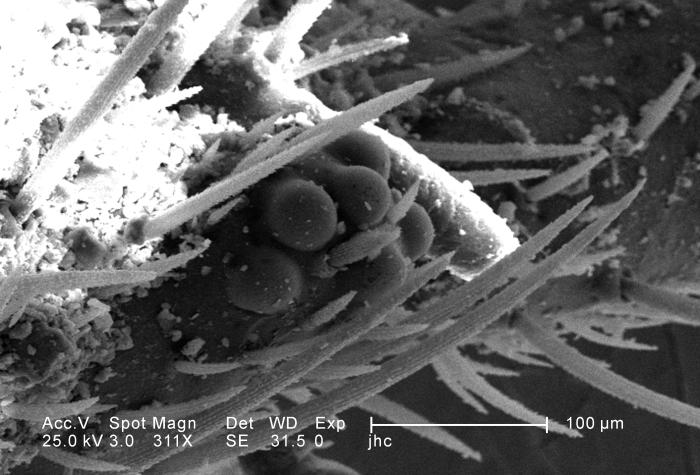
Under a magnification of 311X, this scanning electron micrograph (SEM) depicted some of the ultrastructural morphology displayed on the head region of a larval antlion, surrounding the region of its right compound eye. This larva is sometimes referred to as a 'doodlebug', because of the trails it leaves in the soft sand as it hunts for prey. This arthropod, i.e., jointed legs, undergoes dramatic morphologic changes when it metamorphoses into a beautiful flying antlion lacewing. Note the particulate debris dispersed over the exoskeletal surface, which represents sand, and other constituents of the antlion's natural environment. See PHIL 11813 through 11817 for additional views of the eye under successively greater madnifications.